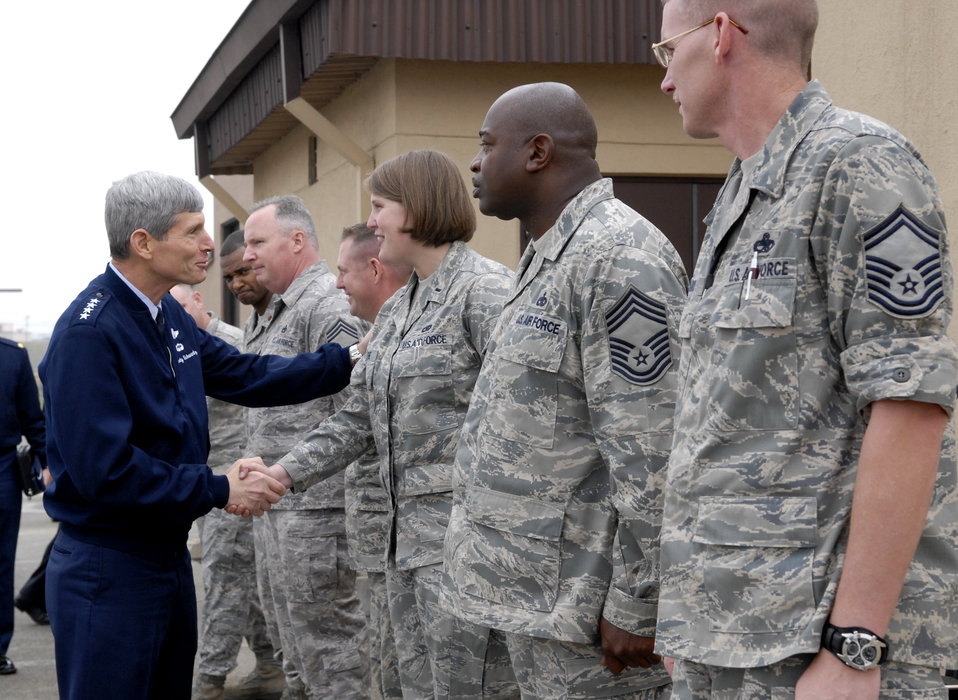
CSAF visits Osan Air Base, South Korea

Air Force Chief of Staff Gen. Norton Schwartz greets Airmen outside the 25th Fighter Squadron building May 11 during his visit to Osan Air Base, South Korea. After his greeting, Gen. Schwartz received a tour of the 25th FS facility. He was there as part of his Pacific Air Force tour, visiting and talking to the Airmen.